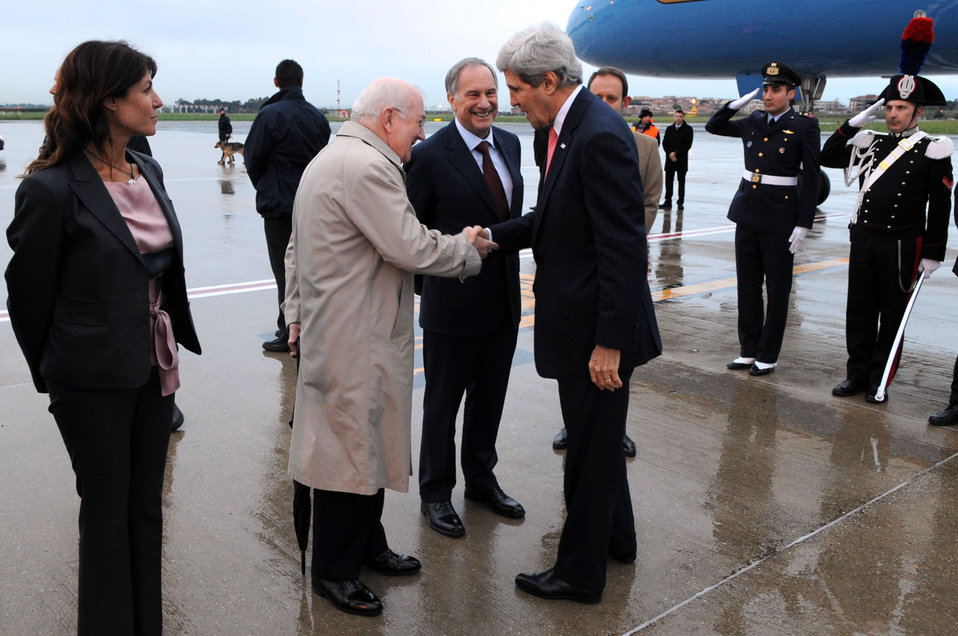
Secretary Kerry Shakes Hands With Vatican Ambassador Hackett Upon Arriving in Rome

U.S. Secretary of State John Kerry shakes hands with U.S. Ambassador to the Holy See Kenneth Hackett upon arriving in Rome, Italy, on March 25, 2014, in advance of President Obama's visit.